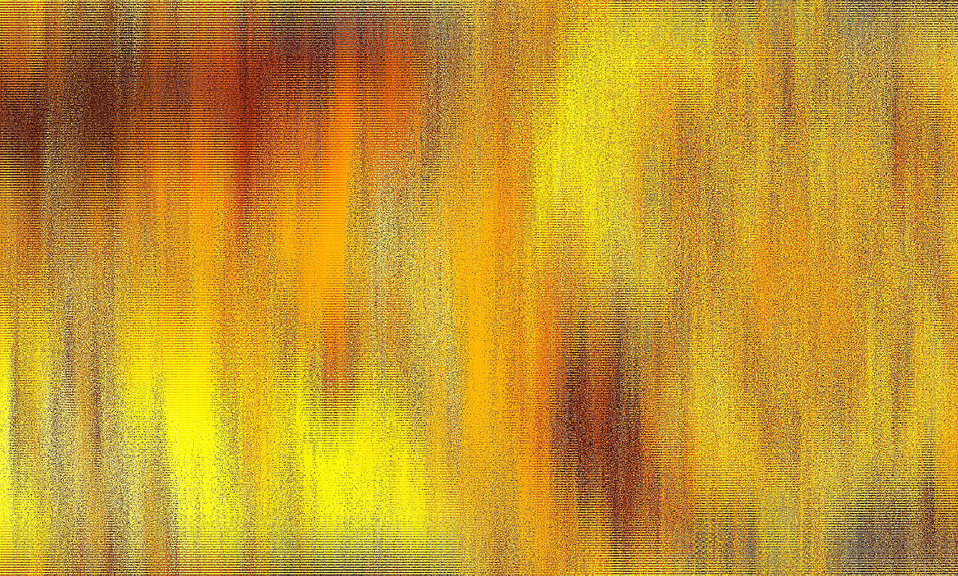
Yellow background

Dirty yellow background structure.